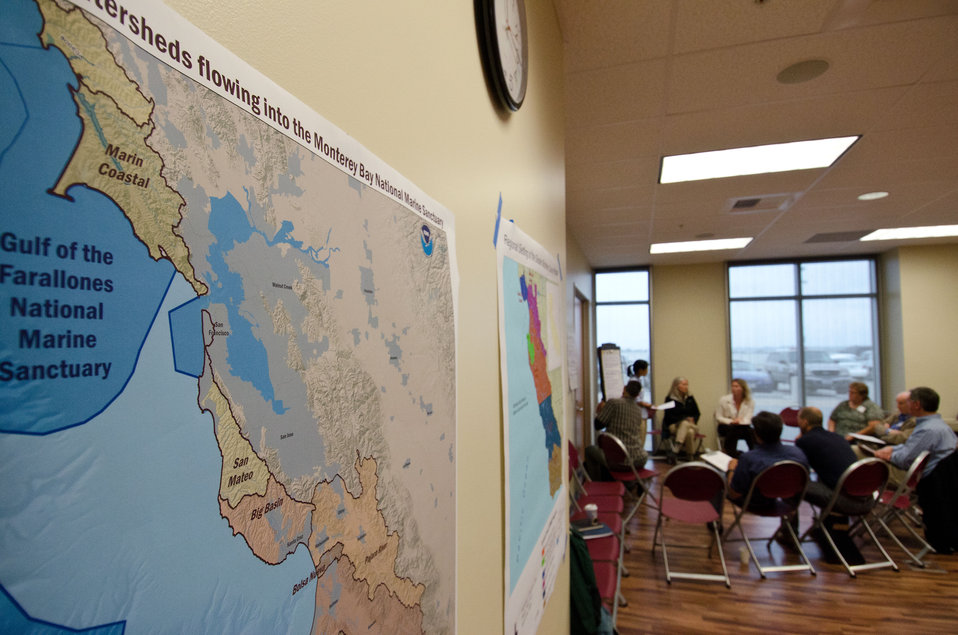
The left map shows the waters and the northern watersheds (in light blue) associated with the America’s Great Outdoors Initiative (AGO) Monterey Bay Pilot Area Focus Session in the City of Watsonville’s Civic Plaza in California, on Friday, June 17, 2011. In the background, National Forest Foundation’s Nirissa Sintetos facilitated a focus group that discussed the exploratory questions presented to all seven groups at the focus session Federal and state resource management agencies came together to identify partnership opportunities and determine actions for protection and enhancement of water quality and publicize voluntary stewardship in the watersheds that drain into the Monterey Bay National Marine Sanctuary. This area includes the counties of San Mateo, Santa Cruz, Santa Clara, San Benito, Monterey, and San Luis Obispo. Key questions identified existing multi-county or multi land use partnerships; what is not being done; possible partnerships - collective resources to maximize the benefits to natural resources and communities; and additional resources that organizations can bring to maximize AGO. President Barack Obama signed the initiative on April 16, 2010 to develop a 21st Century conservation and recreation agenda.